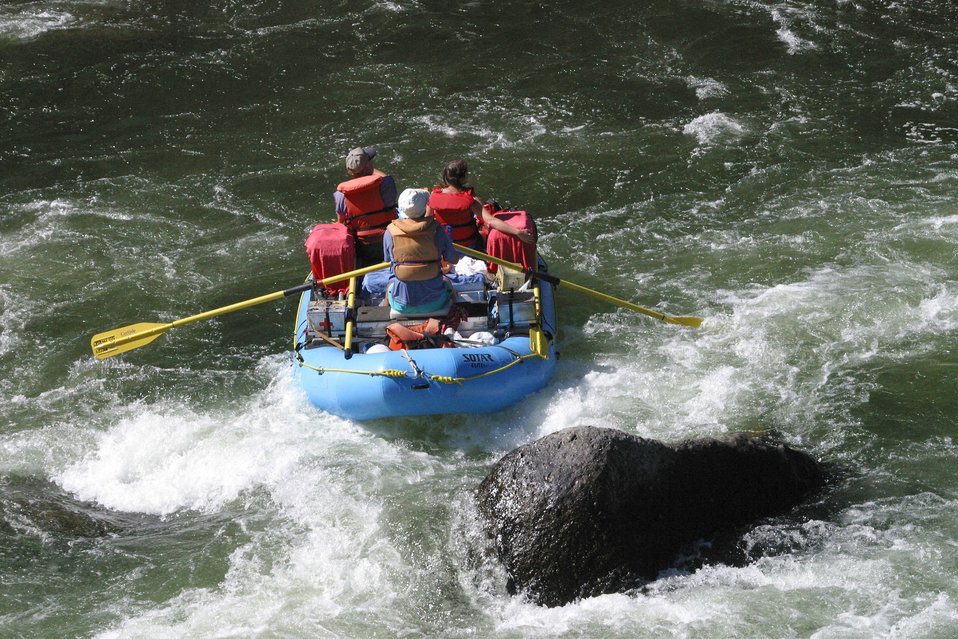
Boaters negotiate Blossom Rapids.